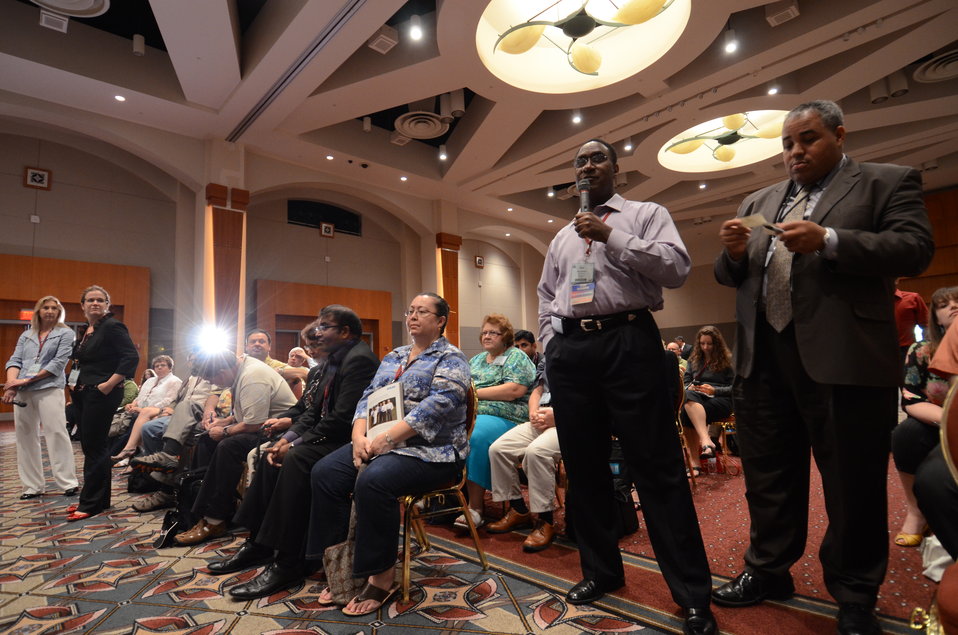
A member of the audience asks Agriculture Secretary Tom Vilsack a question at the International Association for Food Protection (IAPP) 100th annual meeting in Milwaukee, WI, on Wednesday, August 3, 2011. IAPP is committed to providing members worldwide with a forum to exchange information on protecting the global food supply.